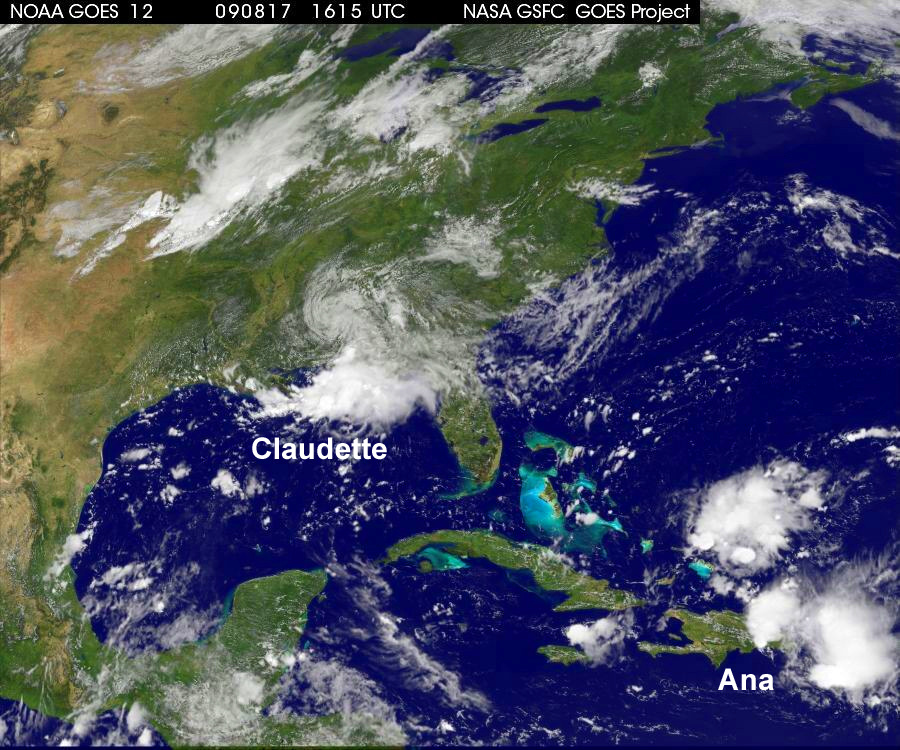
August 17, 2009 - Hurricane Season 2009: Tropical Depression Ana (Atlantic); Ana's Path Being Mapped by NASA Satellites, She's Drenching Puerto Rico